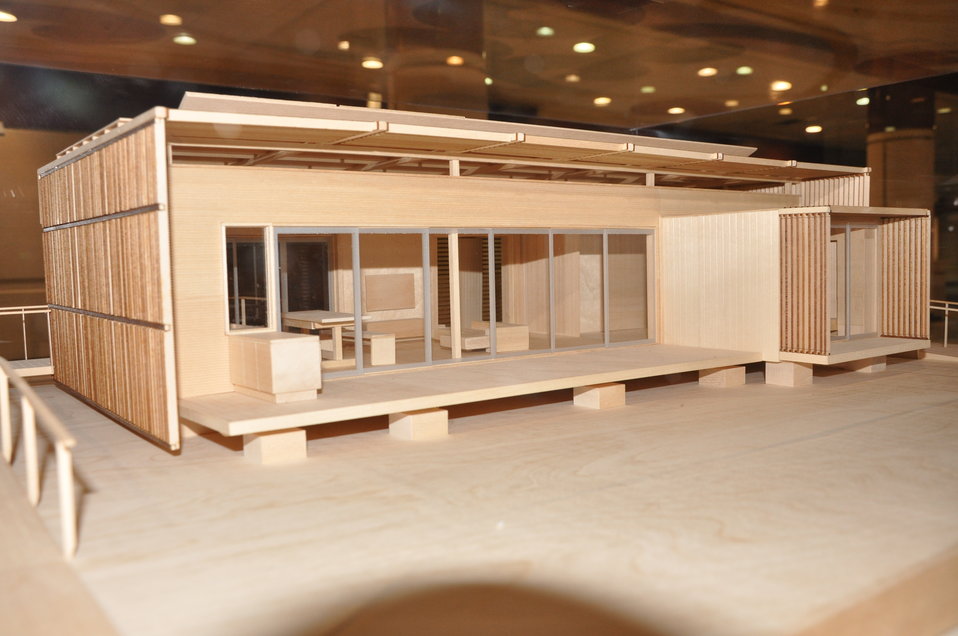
Team Florida